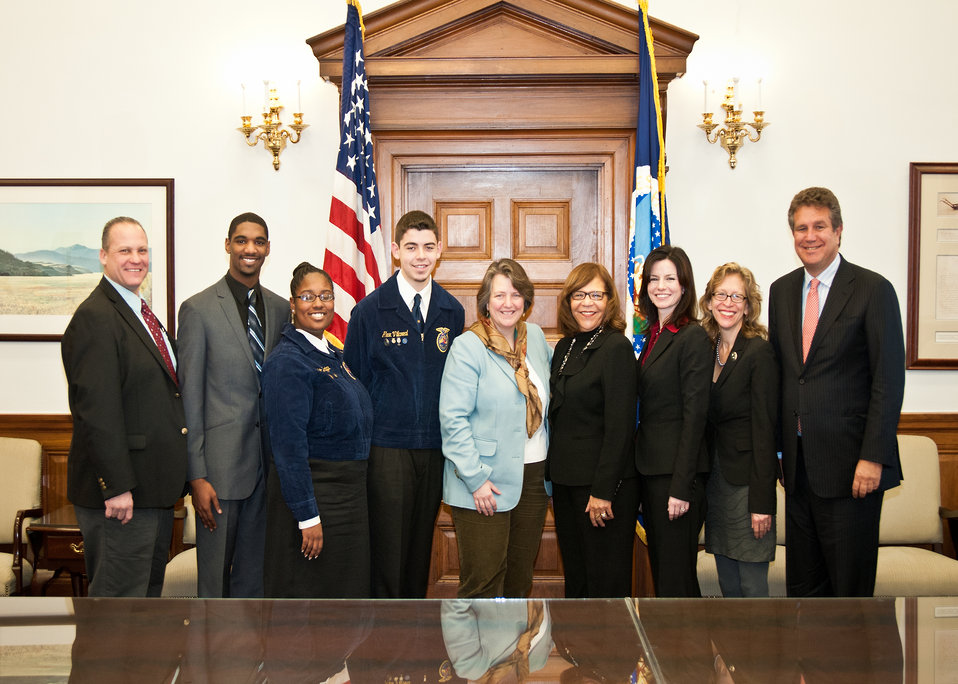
Agriculture Deputy Secretary Dr. Kathleen Merrigan (center) discussed the role of agricultural research with students and faculty from the Chicago High School for Agricultural Science, University of Wisconsin and a representative of Eli’s Cheese Cake at the United States Department of Agriculture in Washington, D.C., on Tuesday, January 10, 2012. From left: Bill Hook, Chicago High School for Agricultural Science, Dantrell Cotton, University of Wisconsin, Bobbie Briggs, Chicago High School for Agricultural Science, Alex Villareal, Chicago High School for Agricultural Science, Agriculture Deputy Secretary Dr. Kathleen Merrigan, Lucille Shea, Chicago High School for Agricultural Science, Shelia Fowler, Chicago High School for Agricultural Science, Molly Jahn, Dean of Agricultural and Life Sciences (former Undersecretary Research Education and Economics), University of Wisconsin and Marc Shulman, Eli’s Cheese Cake.